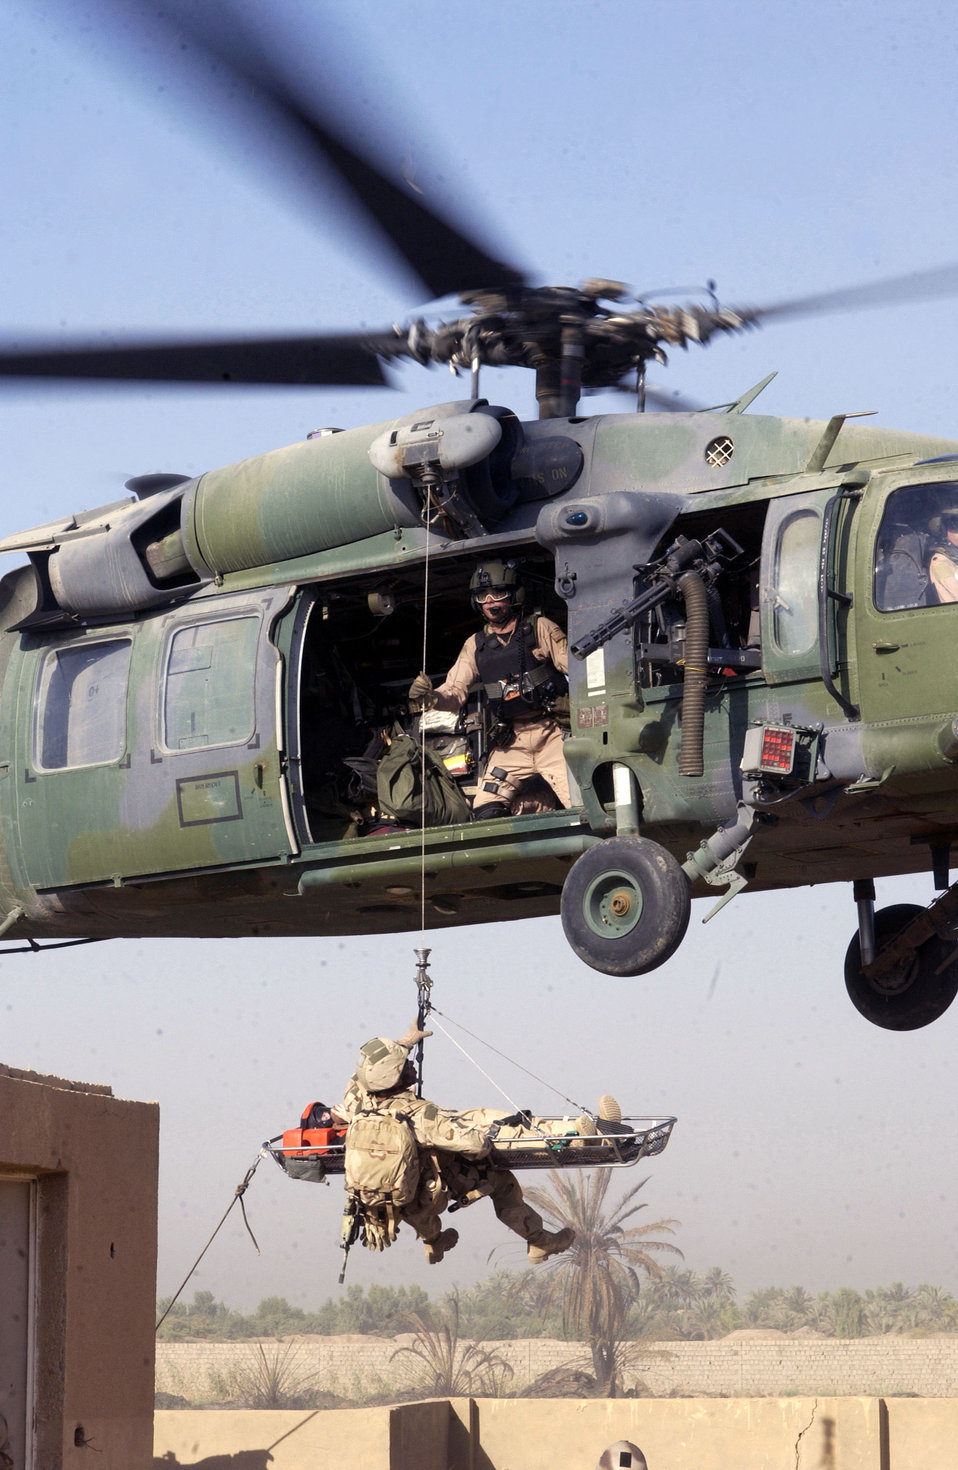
Airborne extraction

OPERATION IRAQI FREEDOM -- A pararescueman aboard an HH-60G Pave Hawk picks up a